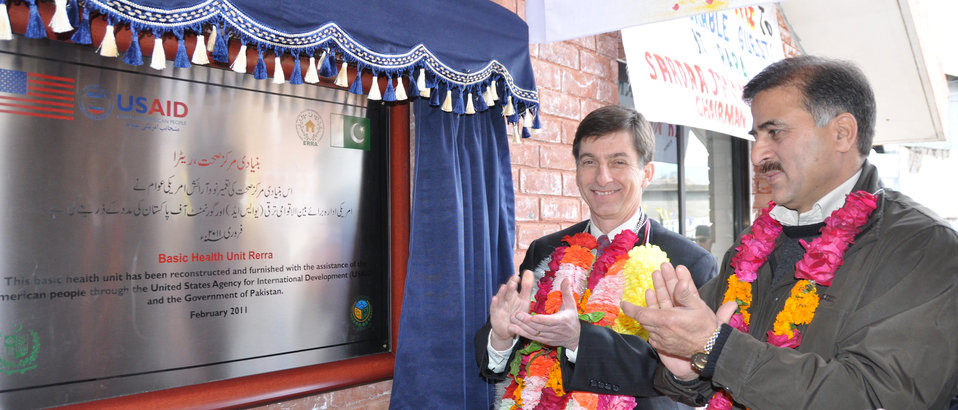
Basic Health Unit Rera, Bagh

Bagh, February 24, 2011 – USAID/Pakistan Mission Director Andrew Sisson at the inauguration of Basic Health Unit which provides services to 42,000 population in Rera, Bagh. Originally established in 1962, the building was heavily damaged during the 2005 earthquake. The facility has been reconstructed and furnished with the assistance from the U.S. Agency for International Development (USAID) and the Government of Pakistan.